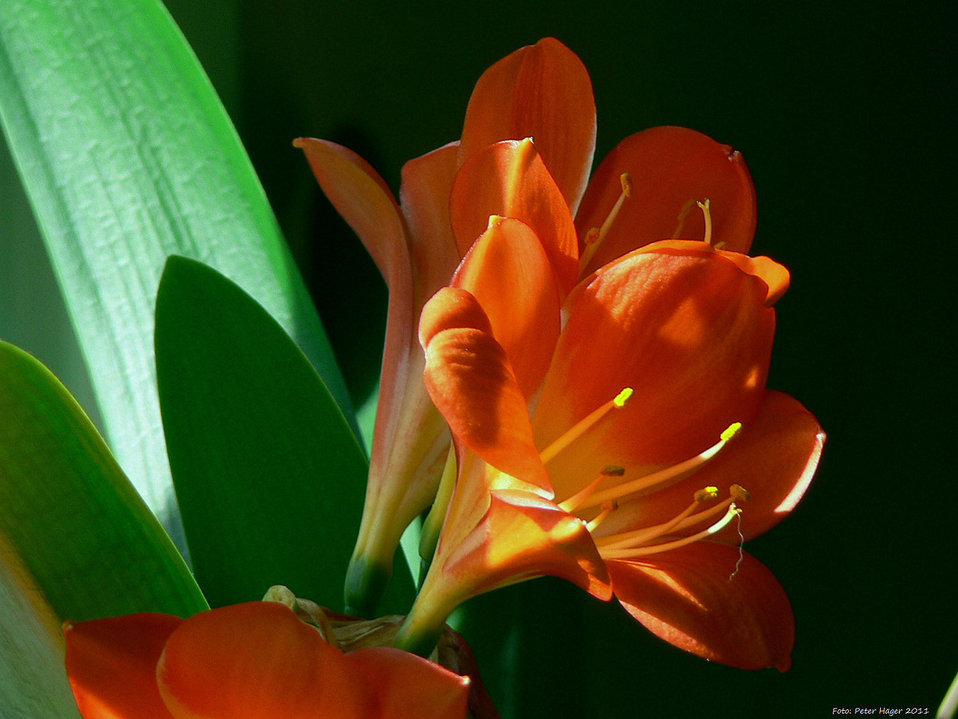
Beautiful flower.